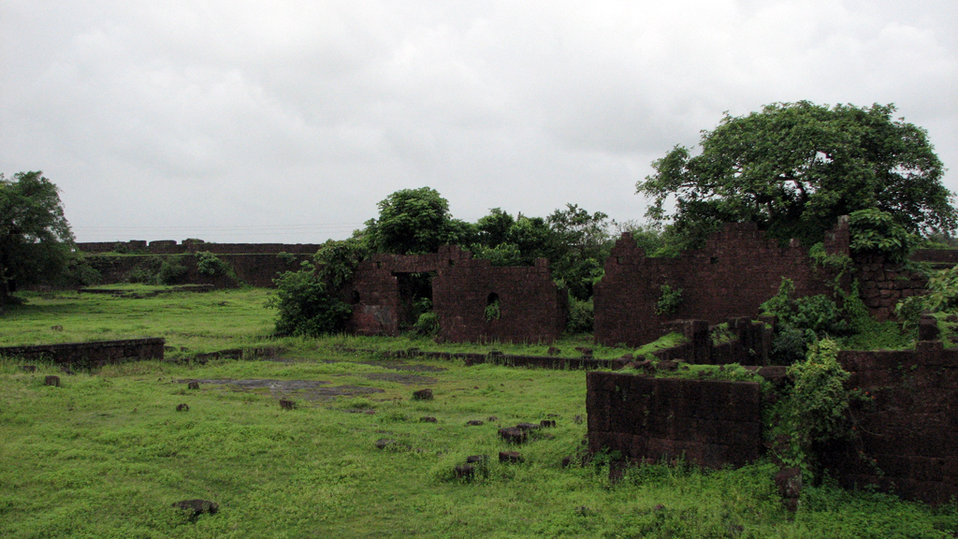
Inside Jaigad Fort